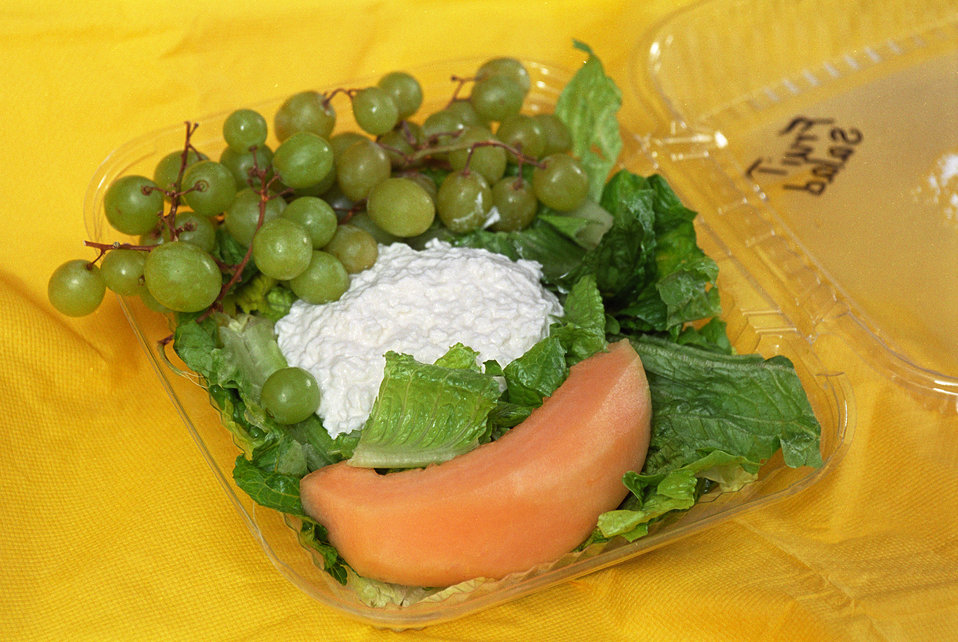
A nutritious snack of grapes, cottage cheese and cantaloupe is prepared at a school in St. Petersburg, FL on January 15, 2003. The U.S. Department of Agriculture's (USDA) Food and Nutrition Service (FNS) Fresh Fruit and Vegetable Program (FFVP) was introduced to schools in 2003. The FFVP provides all children in participating schools with a variety of free fresh fruits and vegetables throughout the school day. It is an effective and creative way of introducing fresh fruits and vegetables as healthy snack options. The FFVP also encourages schools to develop partnerships at the State and local level for support in implementing and operating the program. The Goal of the FFVP is to create healthier school environments by providing healthier food choices, expand the variety of fruits and vegetables children experience, increase children’s fruit and vegetable consumption, and make a difference in children’s diets to impact their present and future health.